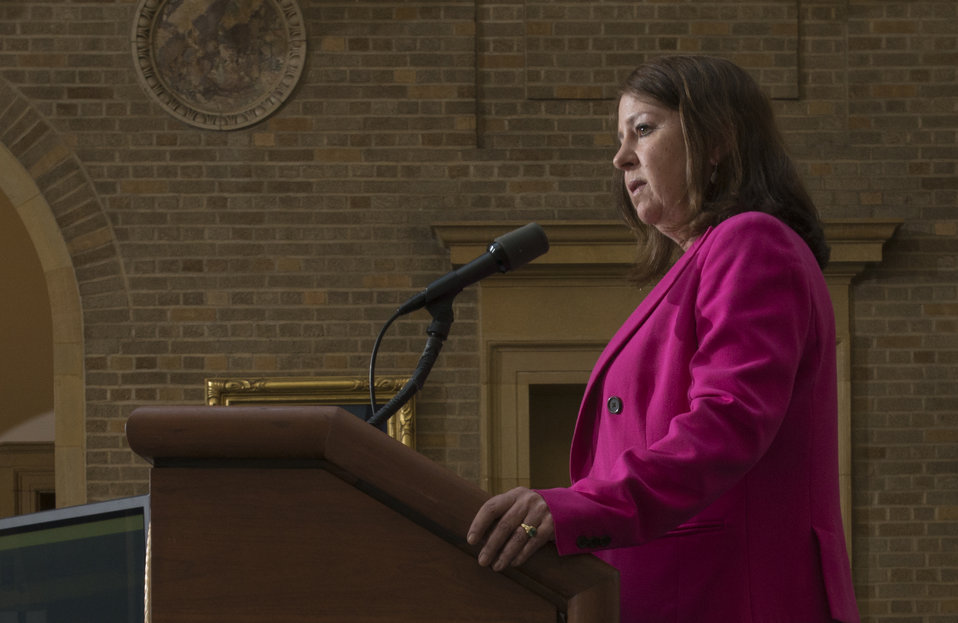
President and CEO of USA Rice Betsy Ward speaks to Ducks Unlimited/USA Rice Federation event at the U.S. Department of Agriculture (USDA) in Washington, D.C. on Tuesday, May 6, 2014.